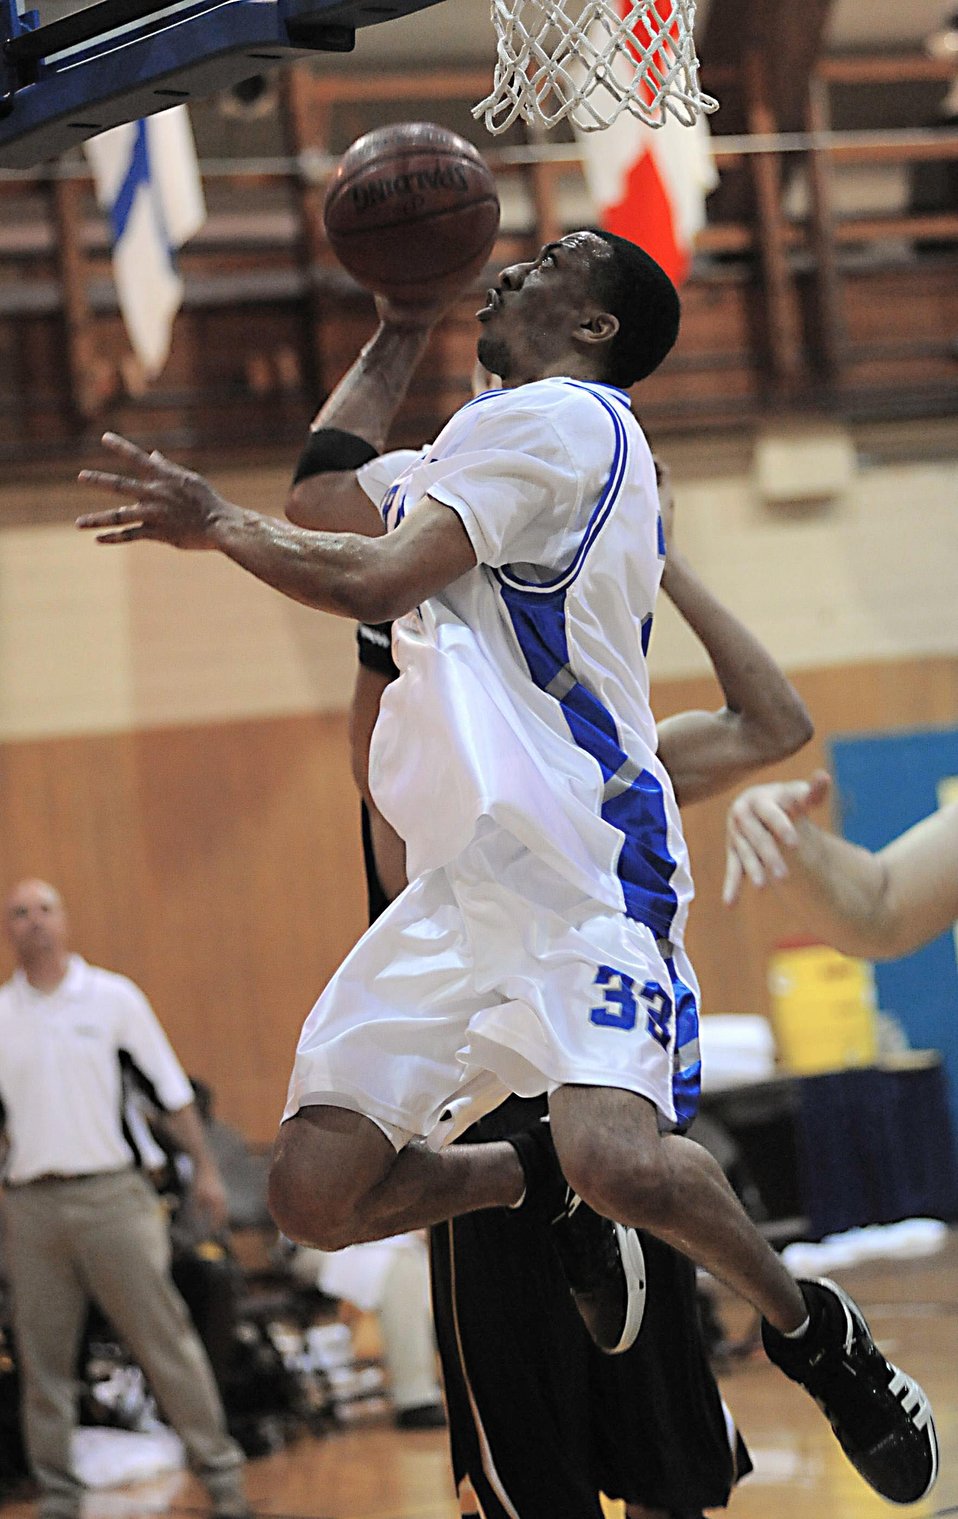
Armed Forces Basketball Championship

Staff Sgt. Marico Gray, from Nellis Air Force Base, Nev., drives the ball to the basket for two points during a basketball game against the Army. The Air Force men beat Army 70-56 during the fourth day of games for the Armed Forces Basketball Championship. The tournament ran from May 12 to 17 at the Naval Support Activity Mid-South in Millington, Tenn.